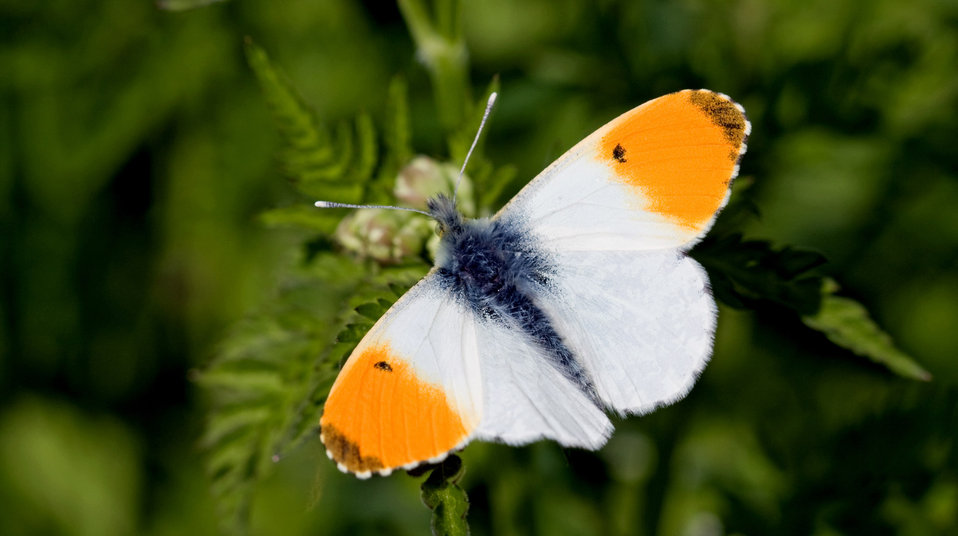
Butterfly close-up macro

Close-up macro image of an orange tip butterfly.